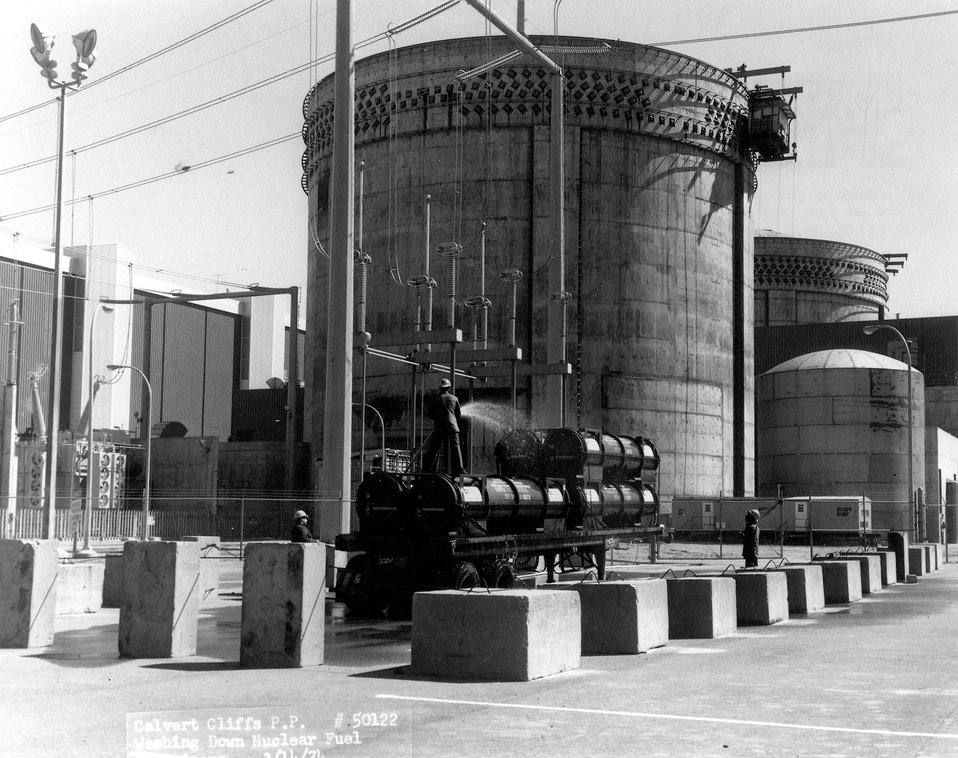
Unloading of nuclear fuel early in 1974 at the Baltimore Gas and Electric Company's Calvert Cliffs Nuclear Power Plant near Lusby, Md., on the Chesapeake Bay. Circa 1974.